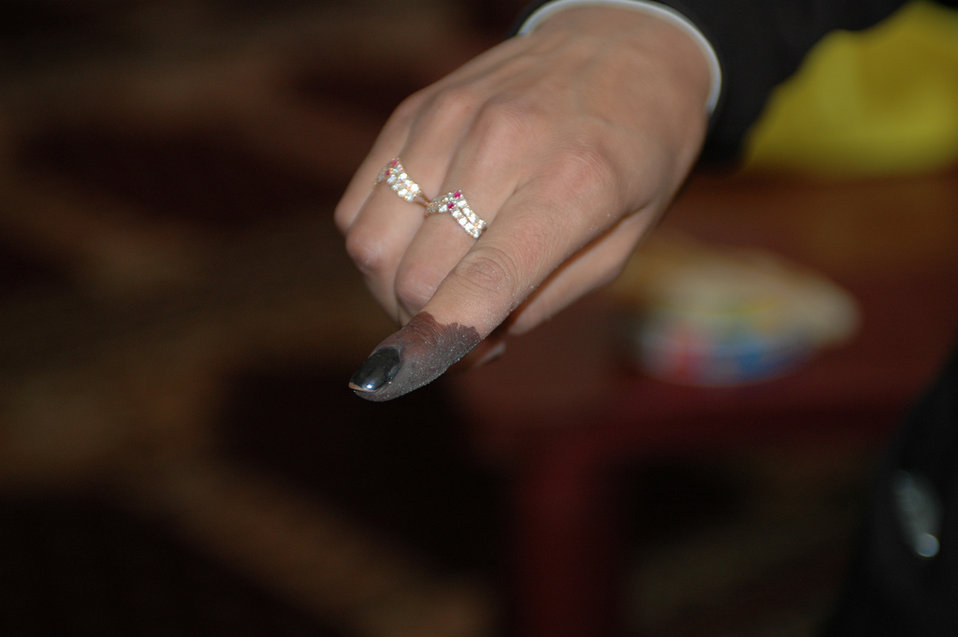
Inked finger